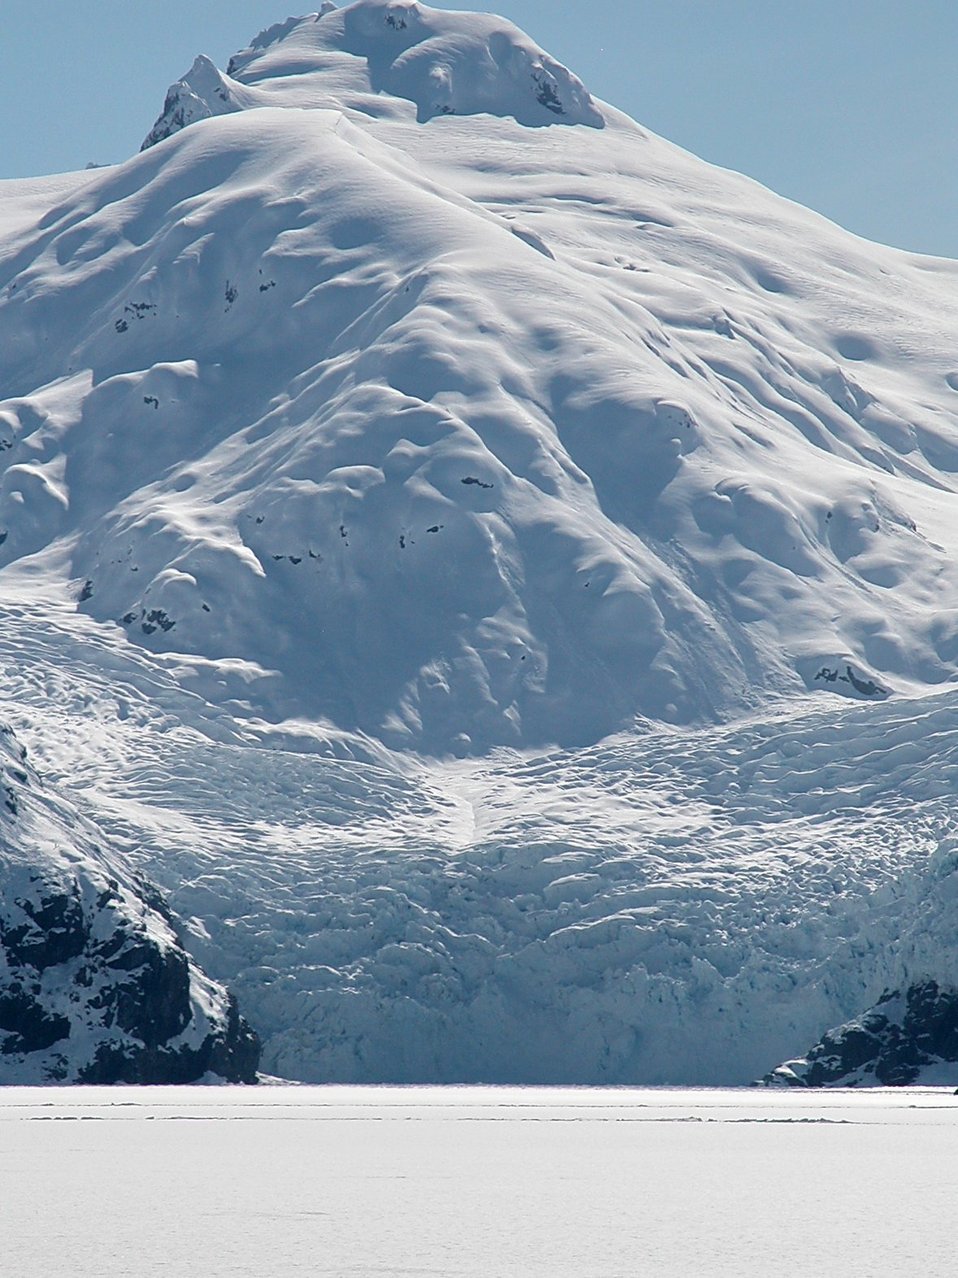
Icy Bay living up to its name